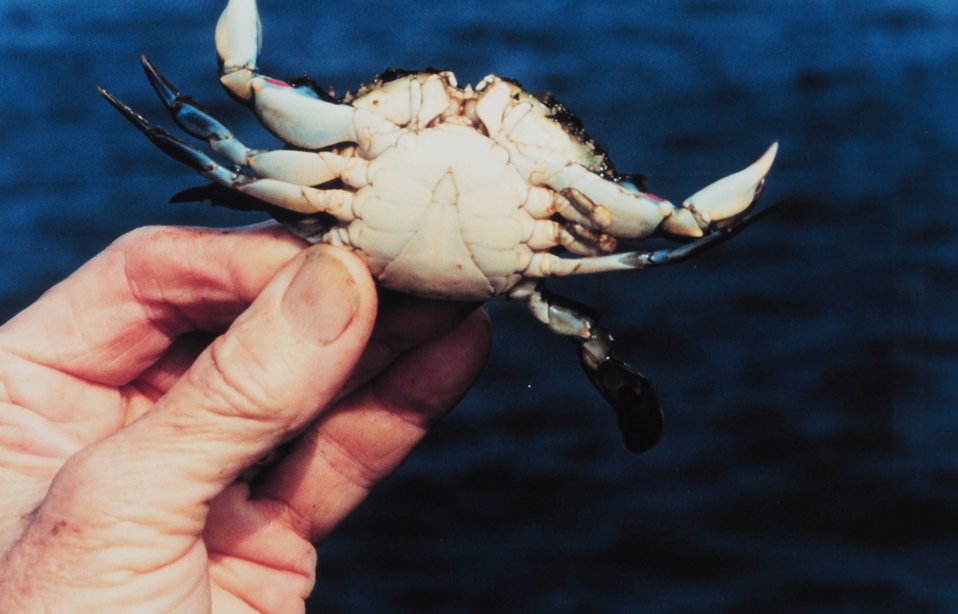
An immature female blue crab (Callinectes sapidus). Sex and maturity determined by the 'V'-shaped apron.